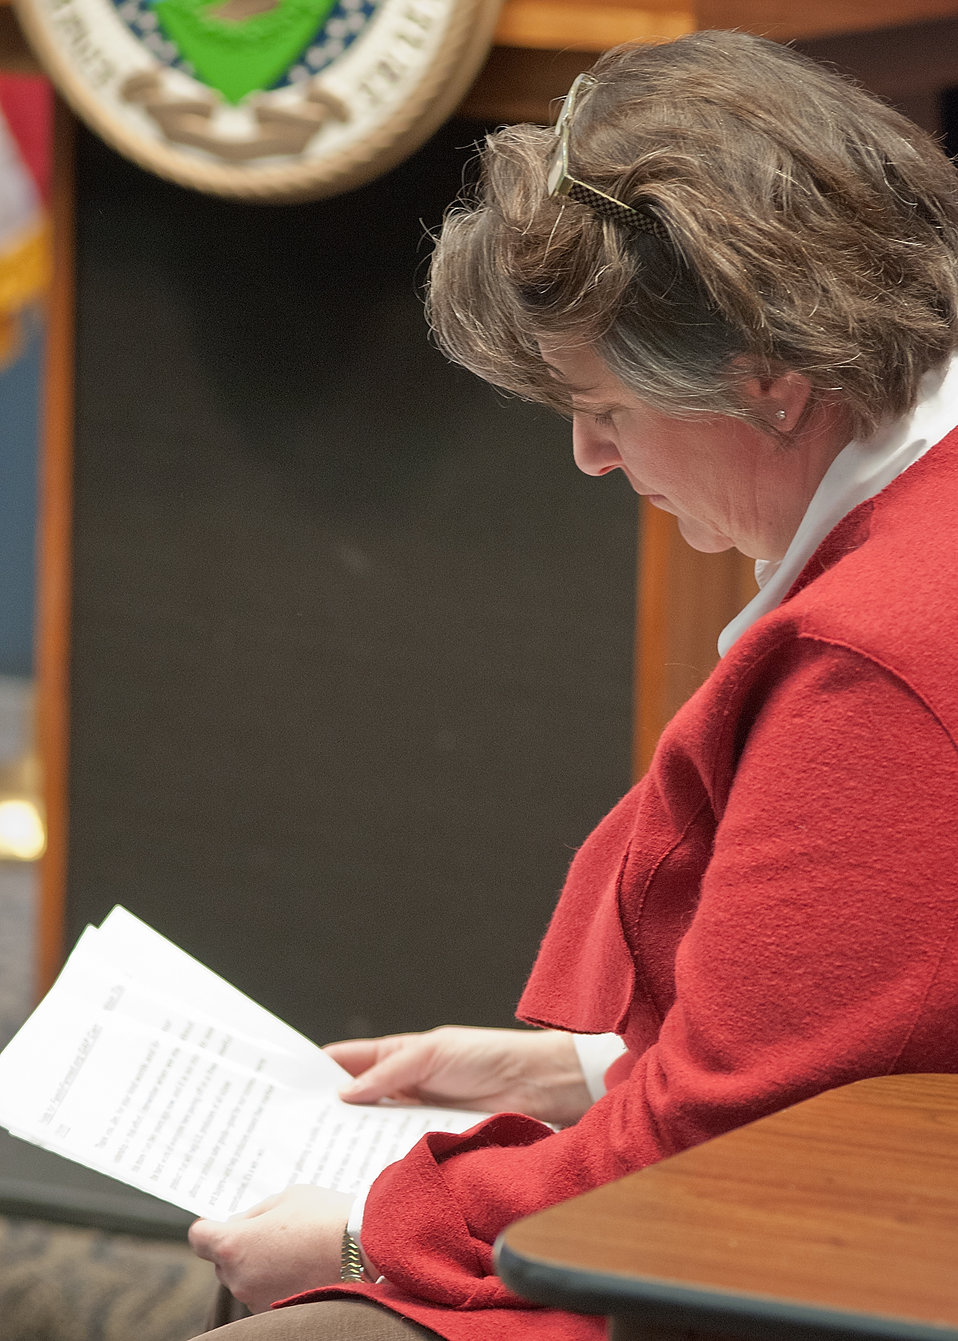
Agriculture Deputy Secretary Dr. Kathleen Merrigan with leaders from agriculture and food organizations introduced a free online tool to assist U.S. producers of all sizes achieve Good Agricultural Practices (GAP), helping to further expand economic opportunities for American agriculture at the United States Department of Agriculture in Washington, D.C., on Thursday, December 15, 2011. USDA’s GAP audit verification program focuses on best agricultural practices to verify that farms are producing, and packers are handling and storing, fruits and vegetables in the safest manner to minimize food safety hazards. The online tool, part of FamilyFarmed.org’s On-Farm Food Safety Project, is the first of its kind and was developed by a broad coalition of farm and produce industry partners with lead funding from the USDA Risk management Agency. It is available at www.onfarmfoodsafety.org.